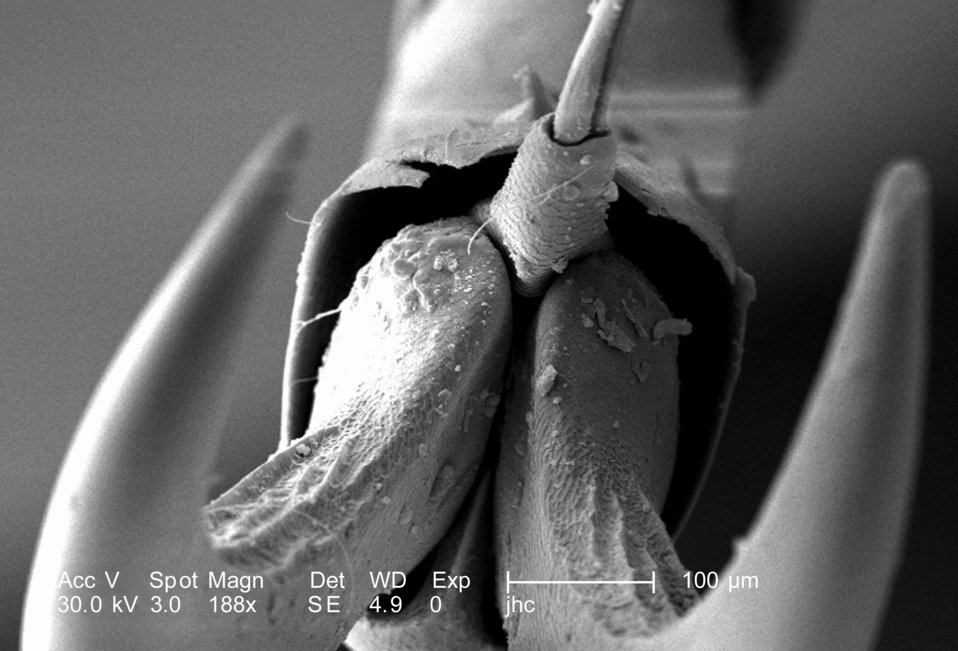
At a magnification of 188X, twice that of PHIL 9947, this scanning electron micrograph (SEM) depicted a head-on view of the distal clawed tip of an adult 'figeater' beetle's, Cotinis mutabilis leg. Phil 9943, 9944, and 9945 depict this anatomical appendicular relationship from its side. The insect leg is comprised of a variable number of segments, however, there are usually six which predominate, including the most proximal coxa, i.e., attaching the leg to the thorax, followed by the trochanter, femur, tibia, tarsus, and pretarsus, which in the case of this beetle is a claw with its spiked empodium.